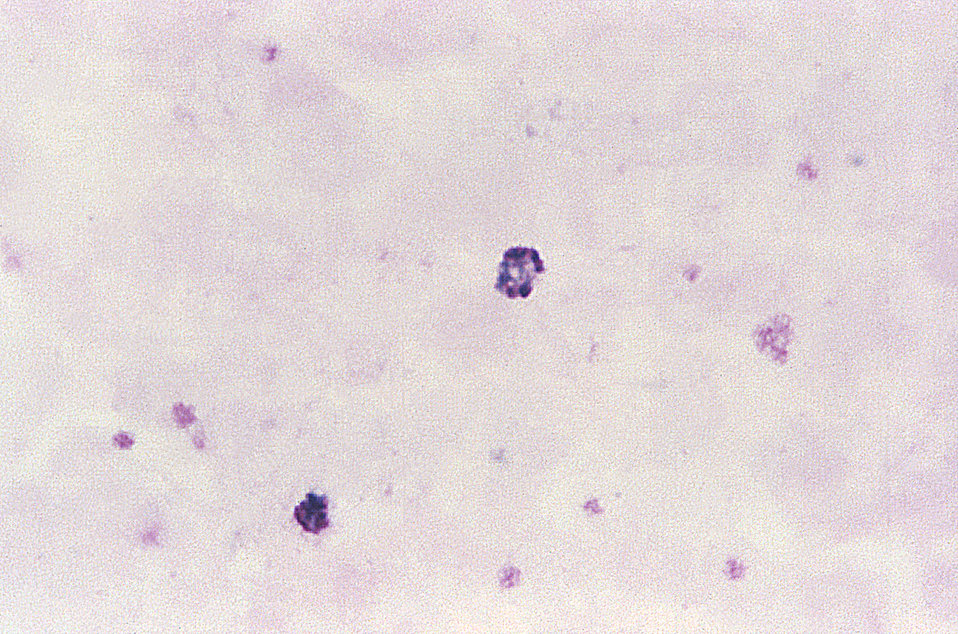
This Giemsa stained thick film micrograph depicts an immature P. malariae schizont containing four chromatin masses.